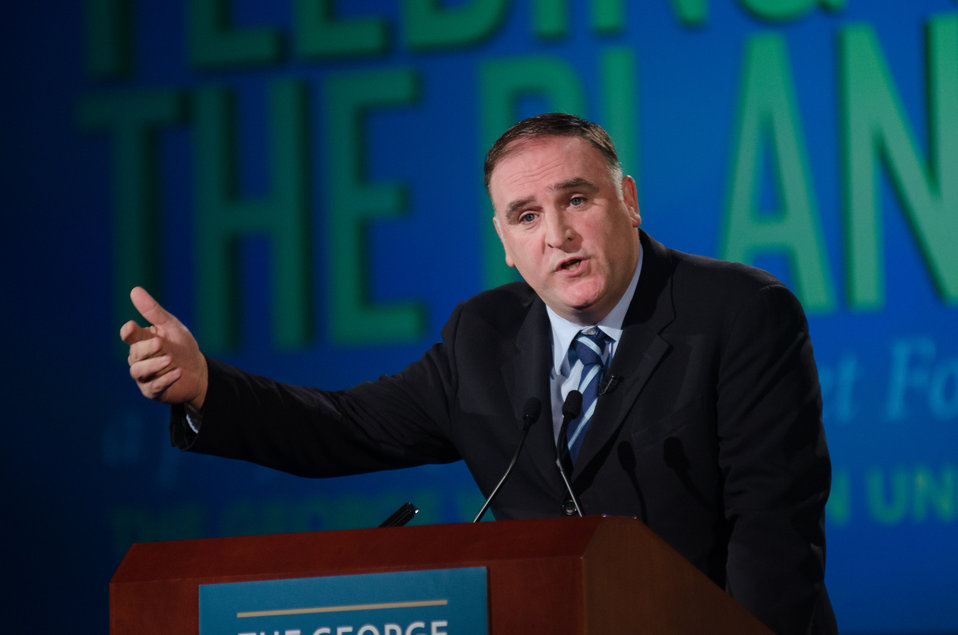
Jose Andres, Chef/Owner of ThinkFoodGroup, Founder of World Central Kitchen, and Culinary Creator and Advocate, speaking at the Feeding the Planet Summit of leaders from agriculture, business, finance, academia, Non Governmental Organization, government and media, along with a large contingent of college students to engage around promising innovations in global agriculture and food security. The Summit spotlights transformation and scalable developments in policy, practices and technologies with special attention to related issues of gender, climate change and urbanization at The George Washington University in Washington, DC, on Wednesday, Oct. 31, 2013.